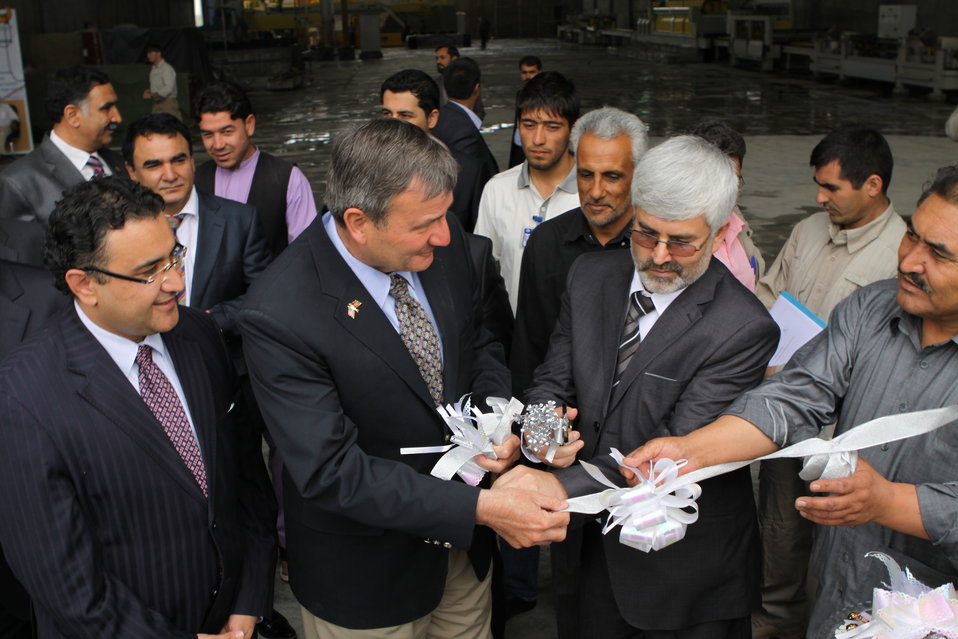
100525 Hirat Marble Conference 084